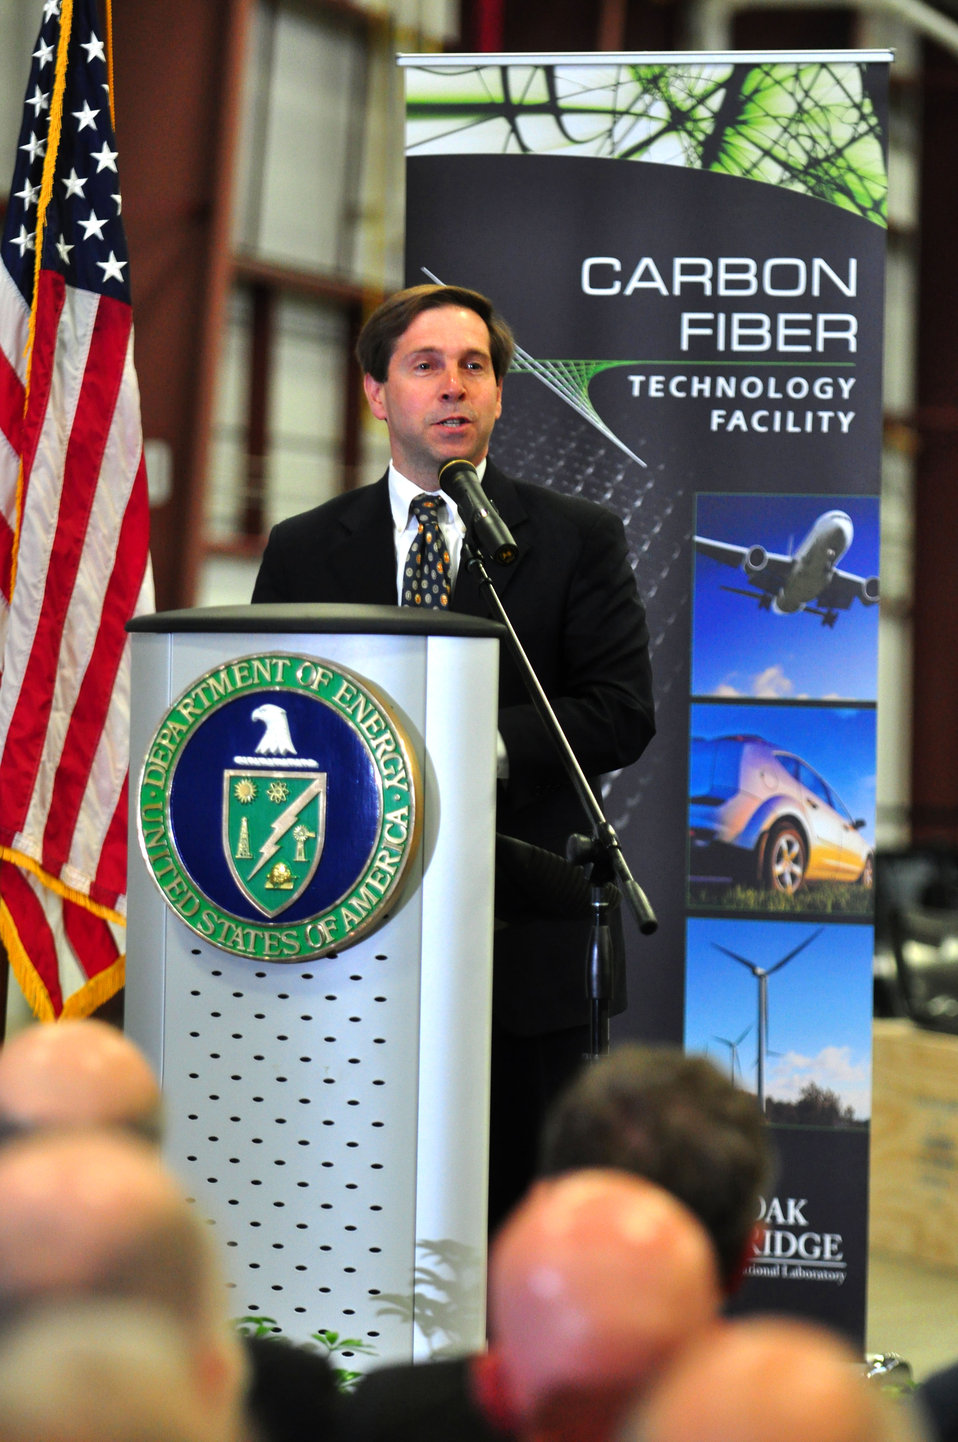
Carbon Fiber Technology Facilty Open House Oak Ridge Tennessee

13-025 DOE photo Lynn Freeny
Tennessee Congressman Chuck Fleischmann